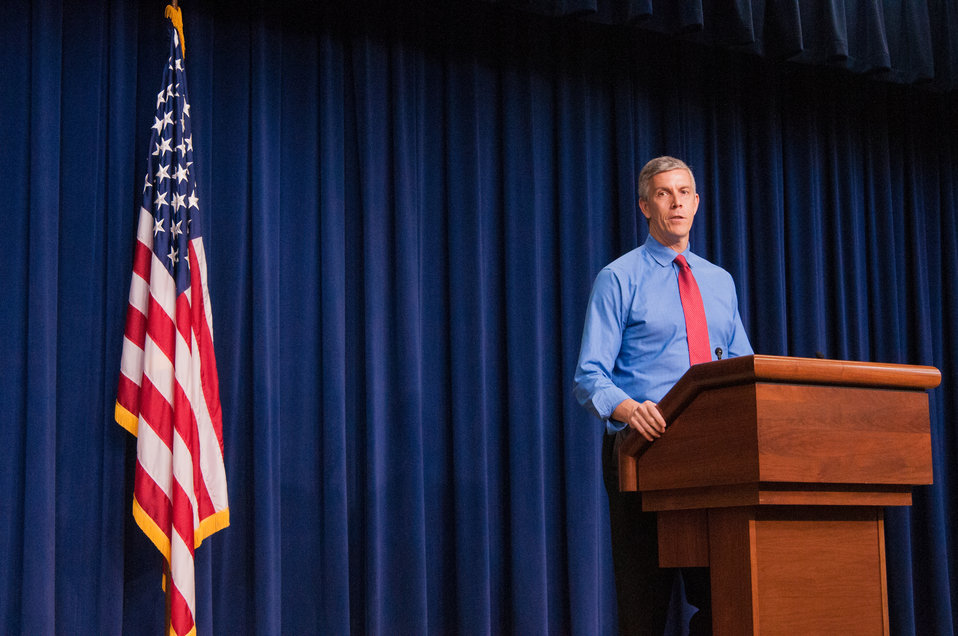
Education Secretary Arne Duncan speaks at a meeting of the White House Rural Council to an audience of the National State President’s Conference of the FFA on Wednesday, Jul. 24, 2013 in Washington, D.C. Secretary Duncan topics related to education and the importance of an education.